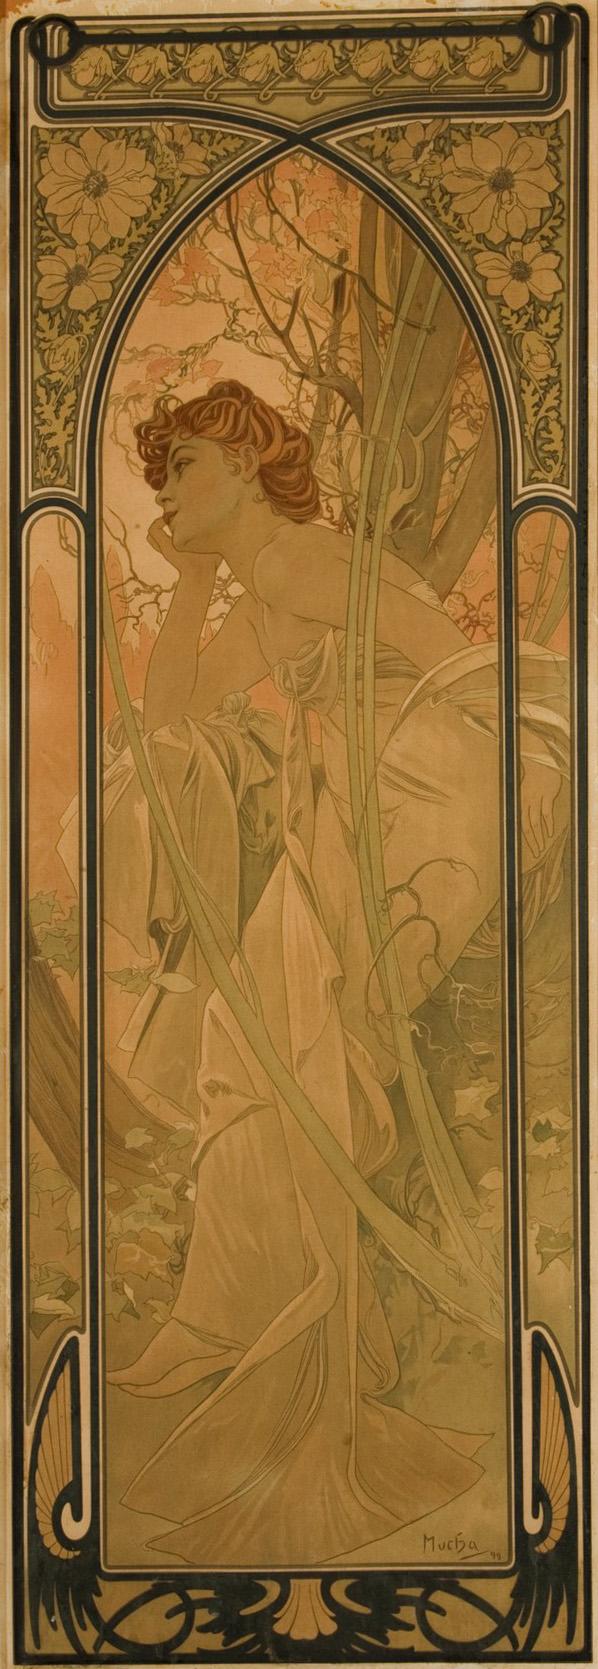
Deutsch: Abend, Farblithografie auf Papier, 102 x 36 cm